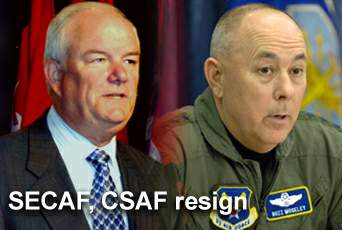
Top two Air Force leaders resign

Secretary of the Air Force Michael W. Wynne and Chief of Staff of the Air Force Gen. T. Michael Moseley tendered their resignations to Secretary of Defense Robert M. Gates June 5.